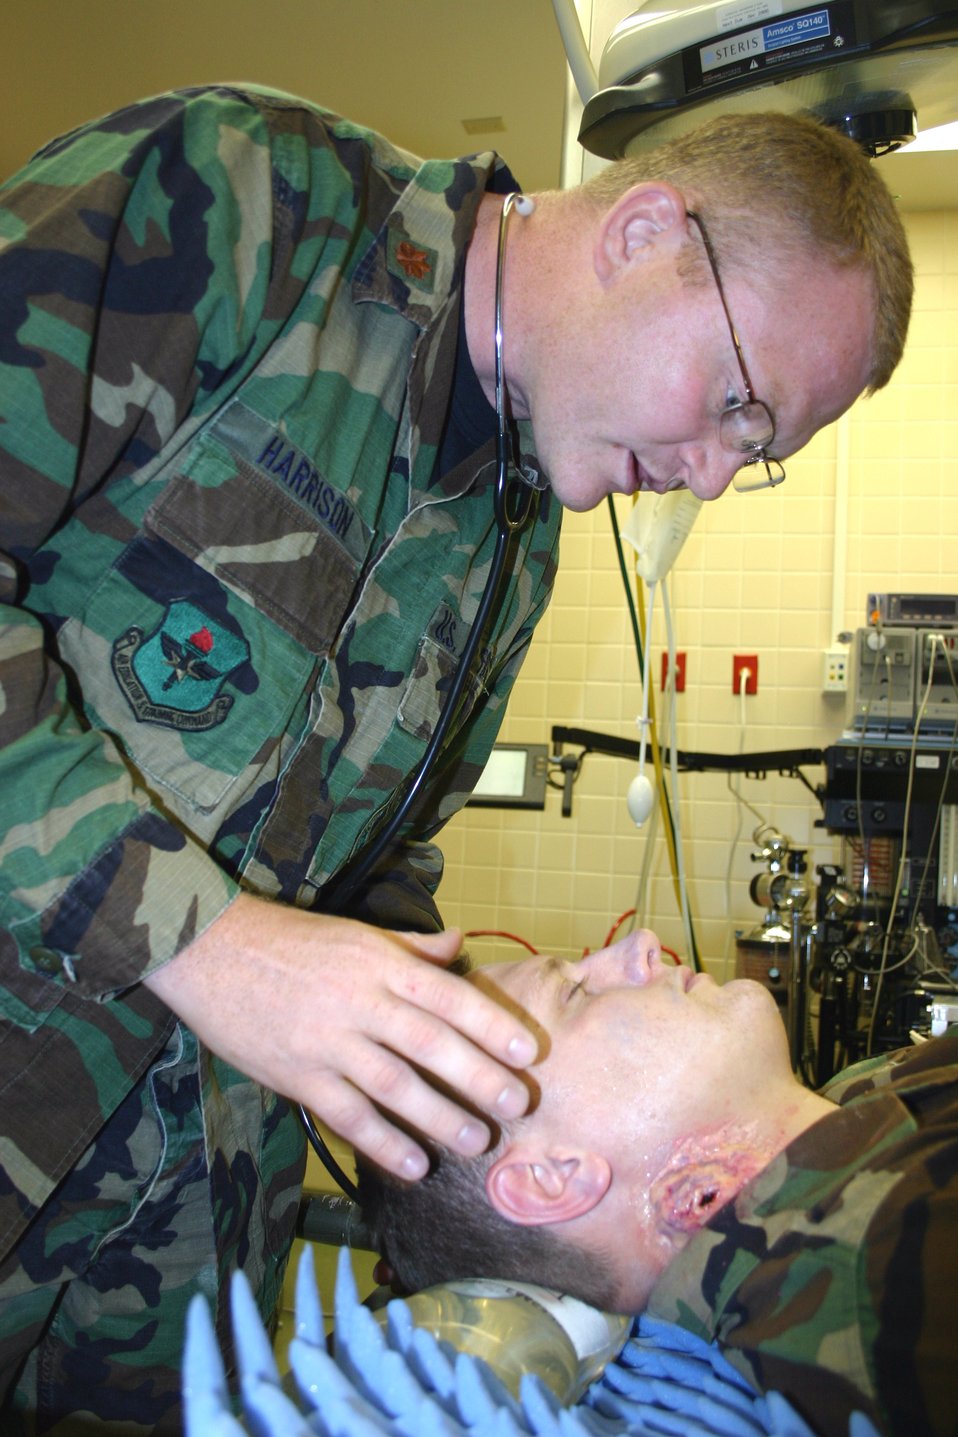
Advanced trauma life support training returns to Wilford Hall

Maj. (Dr.) Corey Harrison does an initial assessment on a simulated gunshot wound victim during Advanced Trauma Life Support training at Lackland Air Force Base, Texas. Dr. Harrison is an emergency department physician with the 59th Medical Wing.